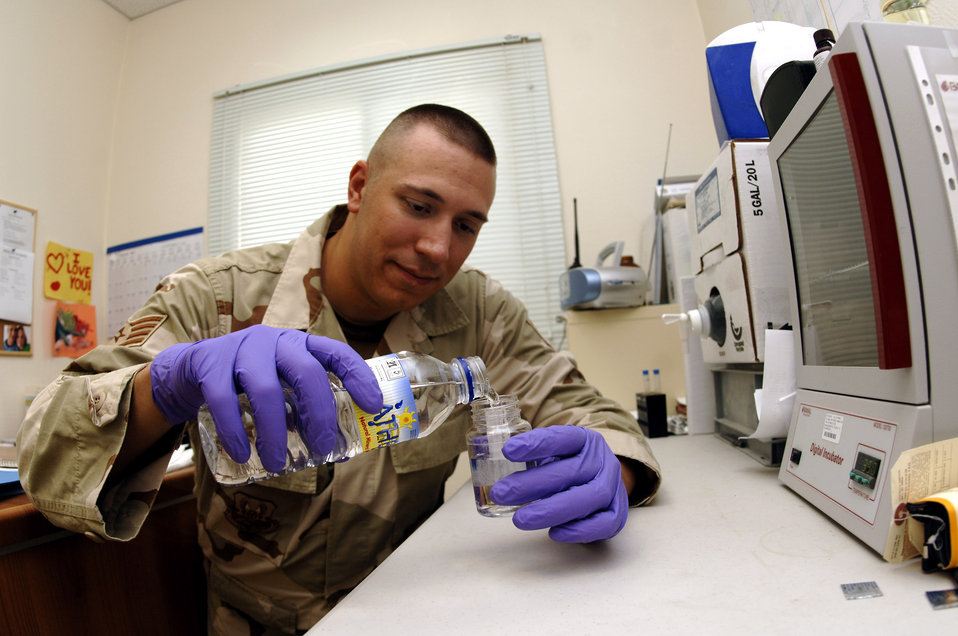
Keeping Airmen safe, secure

Staff Sgt. Thomas Hefty tests a bottle water sample for bacteria and other impurities in Southwest Asia. The bioenvironmental engineering office certifies 1.2 million bottles of water consumed each month. Sergeant Hefty is a bioenvironmental engineering technician with the 379 Expeditionary Medical Group.